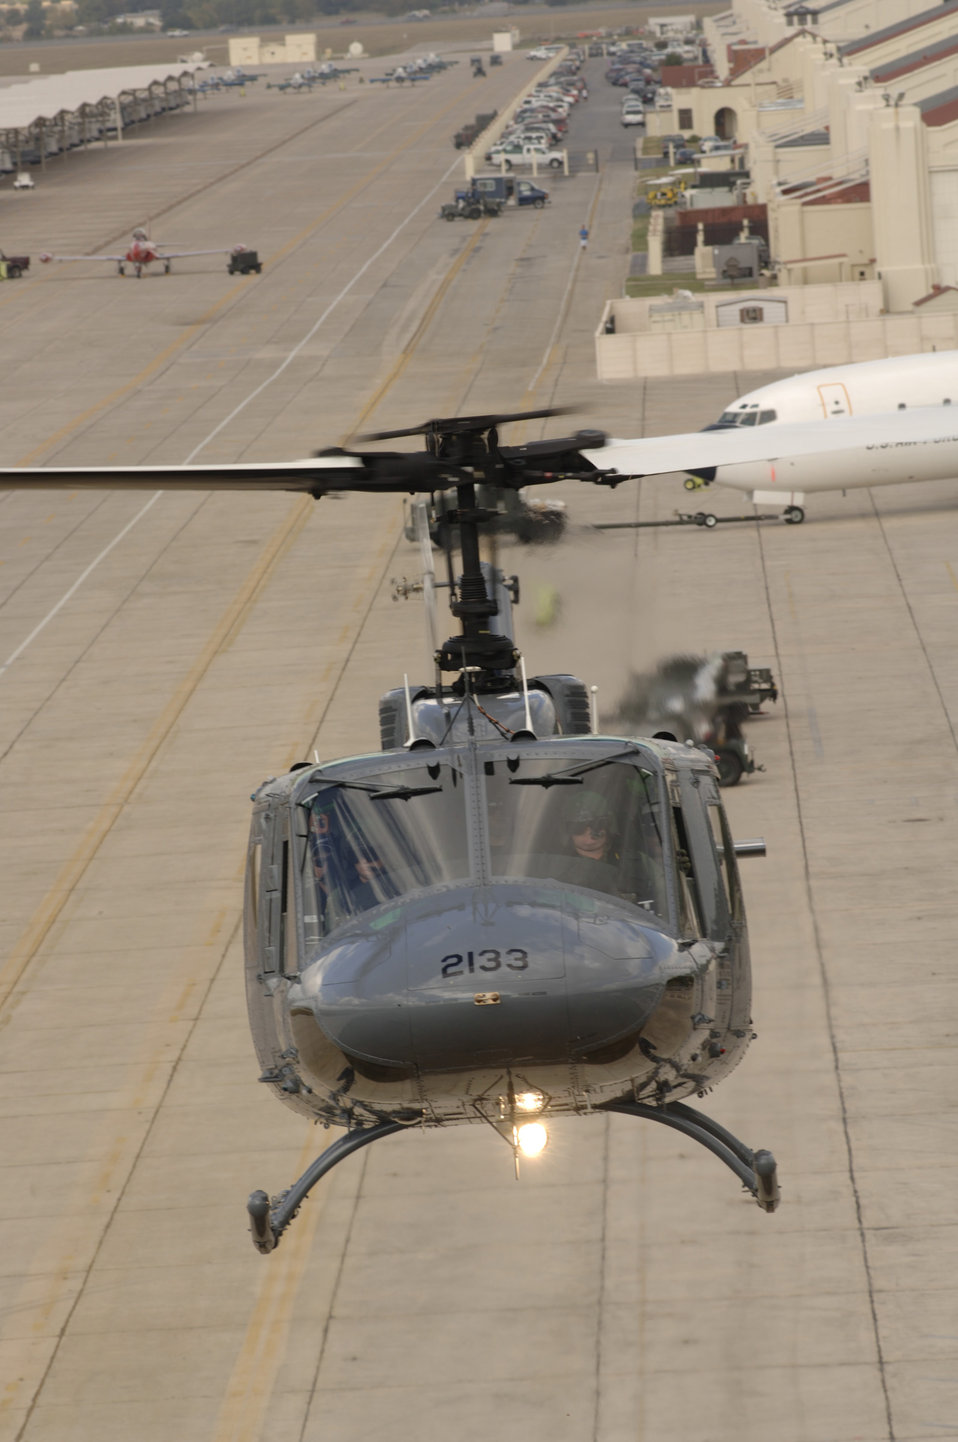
New Huey

RANDOLPH AIR FORCE BASE, Texas -- Capt. John Beurer pilots the TH-1H Huey II helicopter with Jeff Cutrell, instructor pilot. This is the first of 24 TH-1H's that will be modified to train helicopter student pilots. The helicopter is the newest aircraft to join the Air Force inventory.